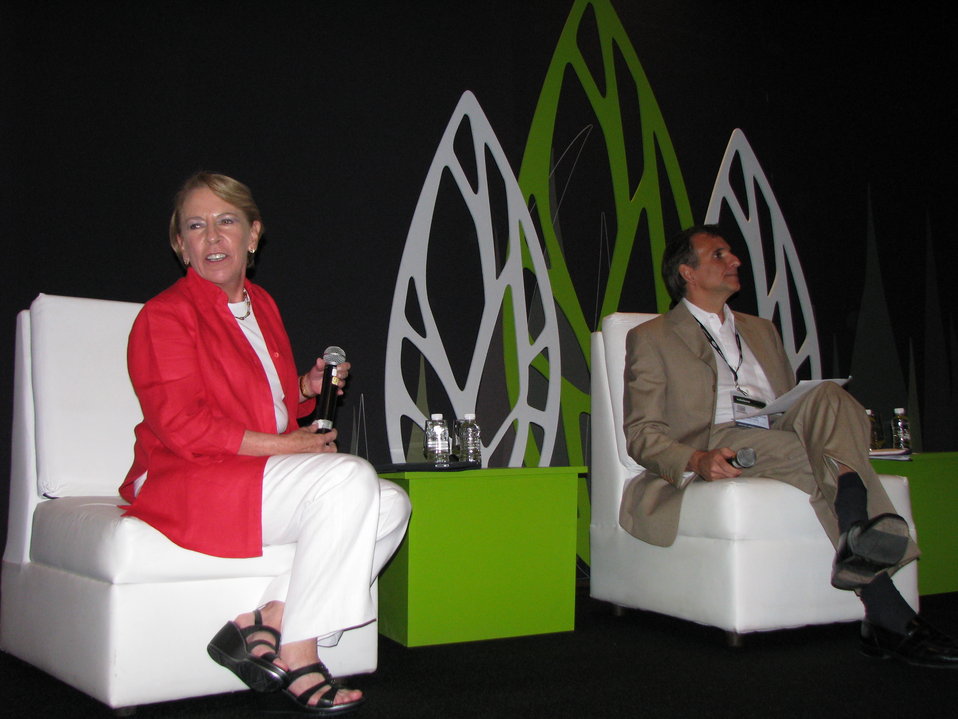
Ambassador Pascual Moderates a Green Solutions Panel

U.S. Ambassador to Mexico Carlos Pascual, right, moderates a Green Solutions panel at the Fiesta Americana Grand Coral Beach hotel in Cancun, Mexico, on December 6, 2010.